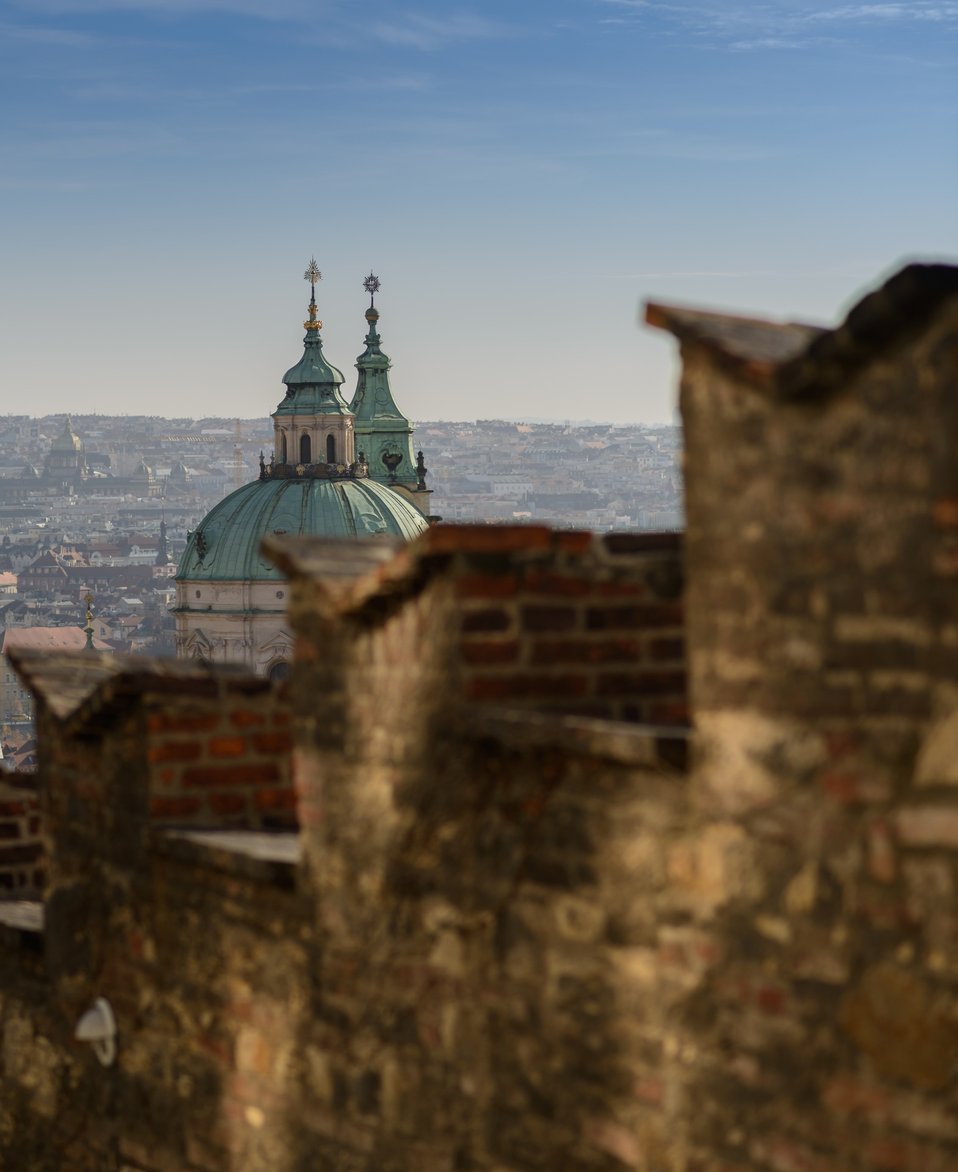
Prague scene.